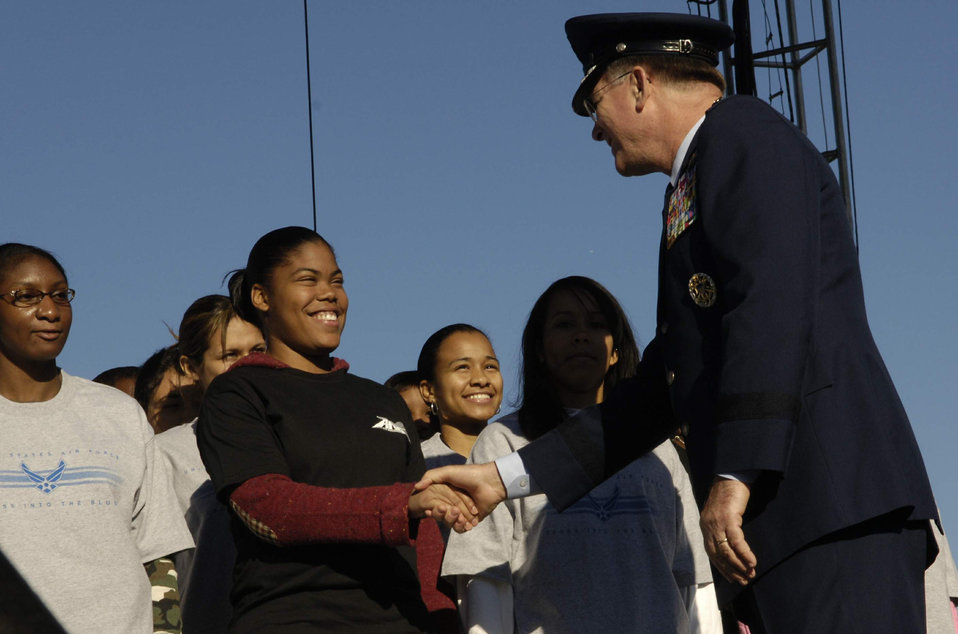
Induction ceremony at Air Force Memorial

U.S. Air Force Lt. Gen. Craig McKinley, Director, Air National Guard, welcomes 90 young men and women into the U.S. Air Force on Saturday, Oct. 14, 2006, during open house activities at the Pentagon prior to the official dedication ceremony of the Air Force Memorial. President George W. Bush will join Senior Defense Dept. and Air Force officials in a ceremony to present the memorial to the Nation. Desiged by the late James Ingo Freed the memorial with its three soaring spires inspired by the U.S. Air Force Thunderbirds bomb burst manuever, pays tribute to and honors the patriotic men and women of the U.S. Air Force and its predeccessor organizations. An open house will run near the Pentagon in conjunction with the dedication ceremony which will feature performances by the U.S. Air Force Band, the U.S. Air Force Honor Guard drill team, and will culminate with a concert featuring country music performer LeeAnn Womack.